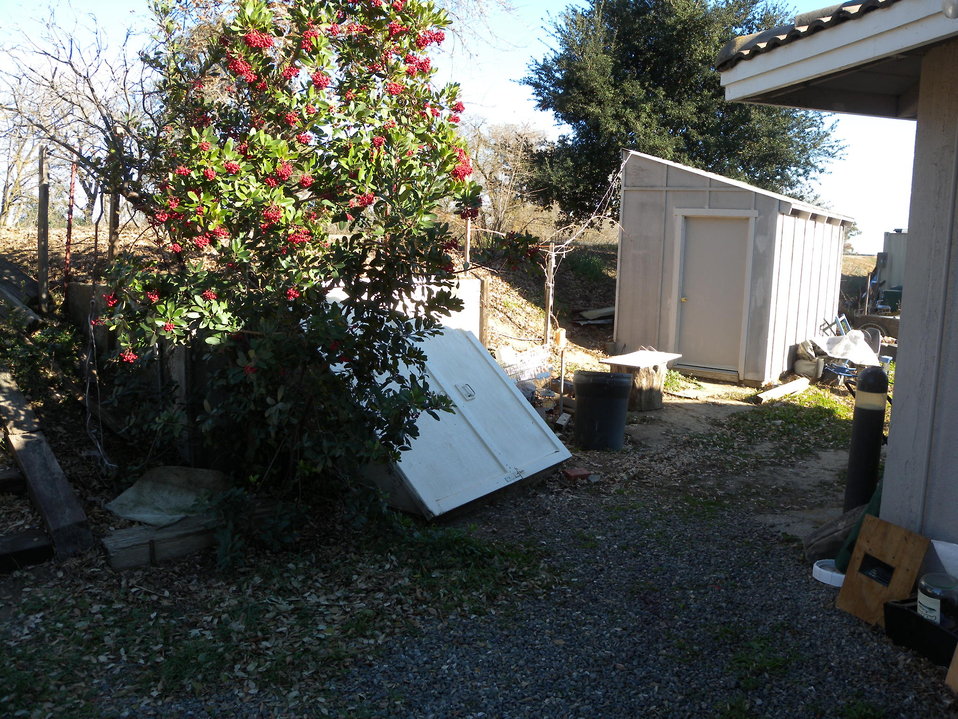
Wine cellar in a Putah Creek levee

A wine cellar dug into a Putah Creek levee near Davis, Calif., shown Jan. 12, 2012. This encroachment was identified during a U.S. Army Corps of Engineers levee periodic inspection of two levee systems near Davis conducted in December 2011 an January 2012.